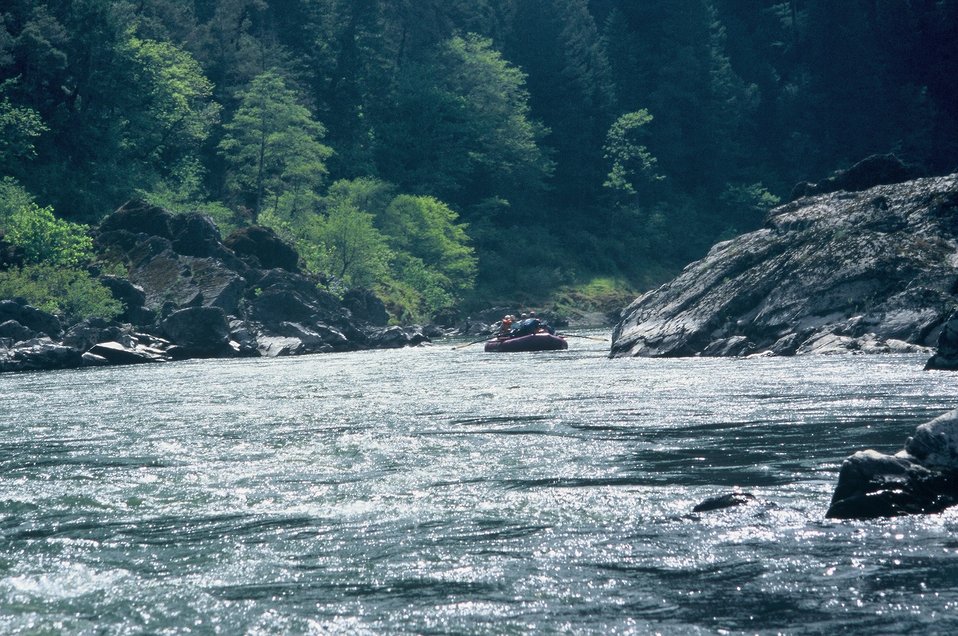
Wild section of the Rogue River from Grave Creek to Foster Bar May 19 to May 22.